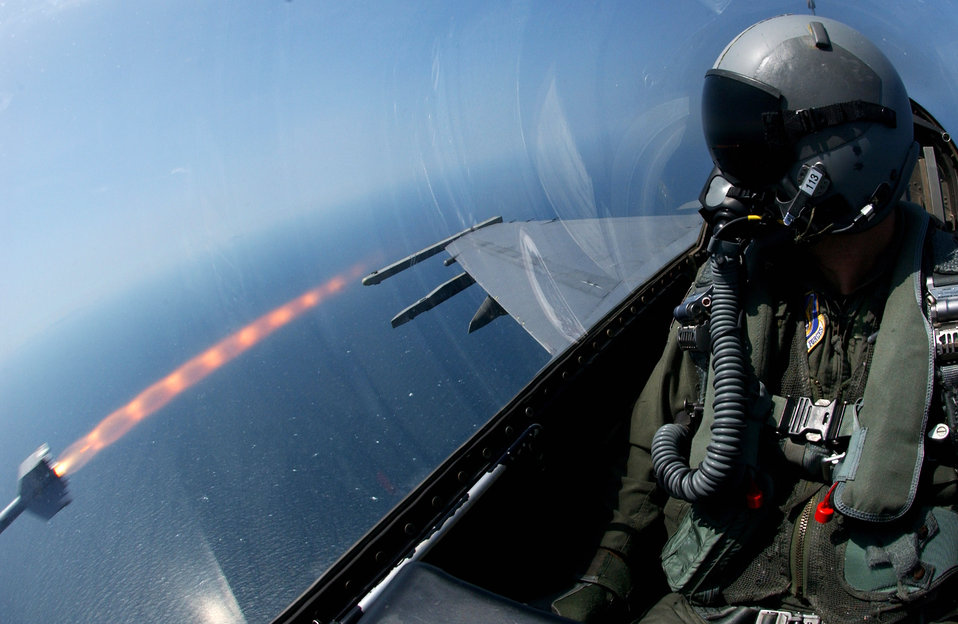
Live fire

An F-16 Fighting Falcon fires an AIM-9 missile off the coast of South Korea during a live-fire exercise Aug. 18. The F-16 is assigned to the 80th Fighter Squadron at Kunsan Air Base, South Korea.